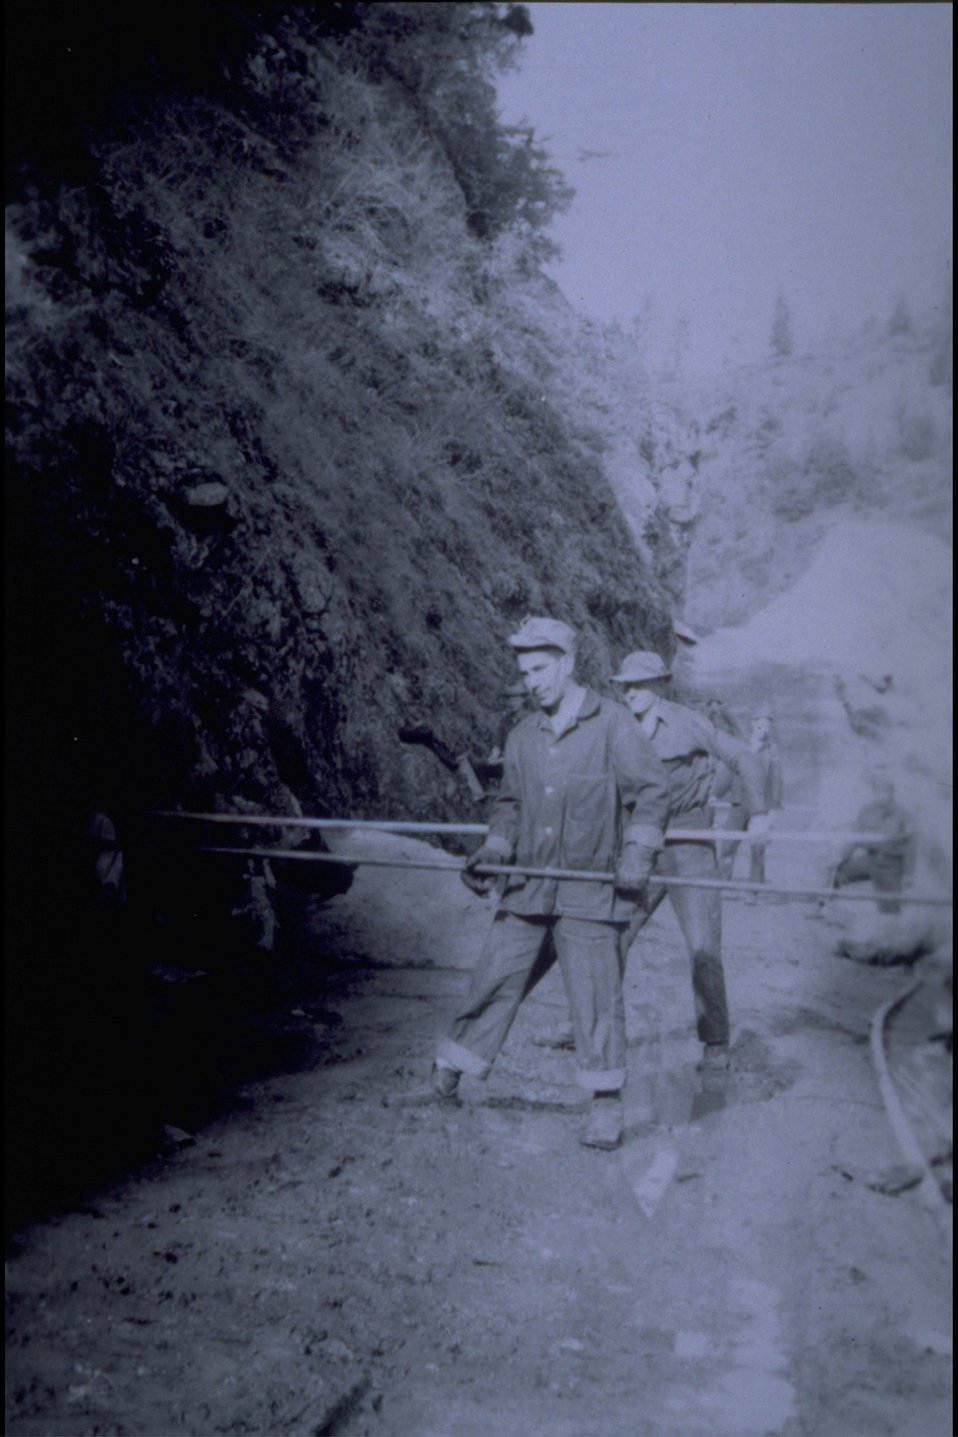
Rogue River - Just below Indian Mary Park. CCC Boys packing powder in drilled holes.